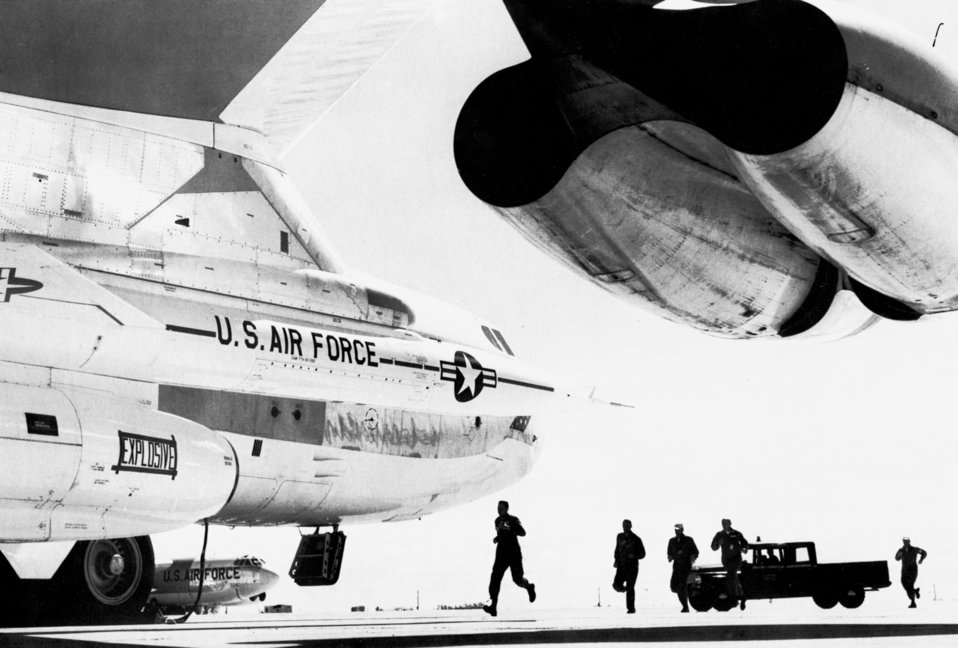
B-52 combat crew

1960s - Members of a Strategic Air Command B-52 combat crew race for their always ready-and-waiting B-52 heavy bomber. Fifty percent of the SAC bomber and tanker force is on continuous ground alert, ready to be enroute to target within the warning time provided by the ballistic missile early warning system. One of the bomber's two hound dog missiles is shown in the foreground.